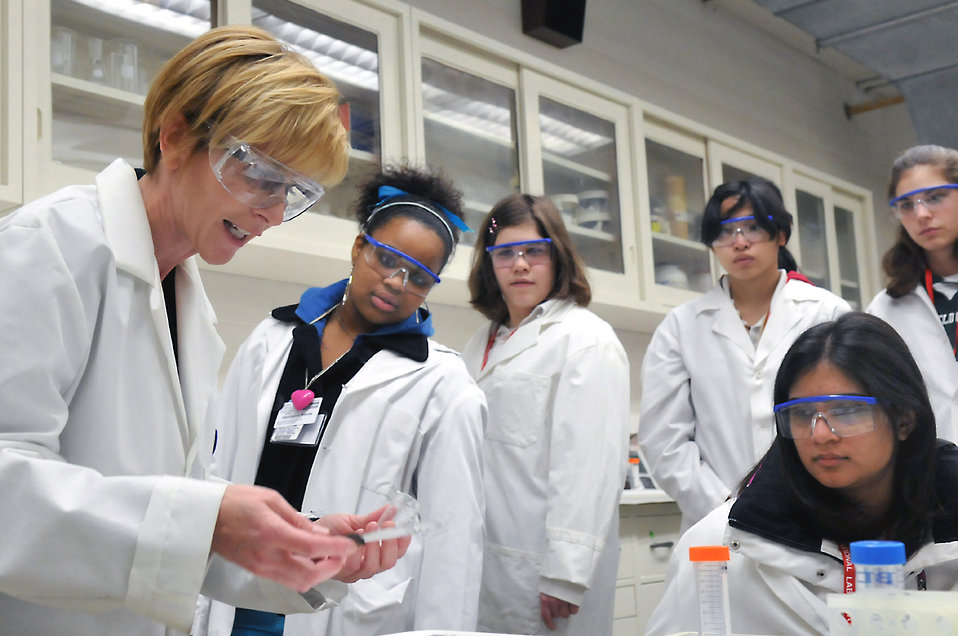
At Argonne National Laboratory, the annual event Science Careers in Search of Women demonstrates to 350 young women from Chicago area high schools why a career in science might be right for them.

The Science Careers in Search of Women conference puts students face-to-face with scientists from a wide variety of disciplines and provides an opportunity to interact with positive female role models. Students attending the event will see first-hand what science and technology careers are all about. More than 7,000 young women have participated in the program since it began at ANL in 1987.